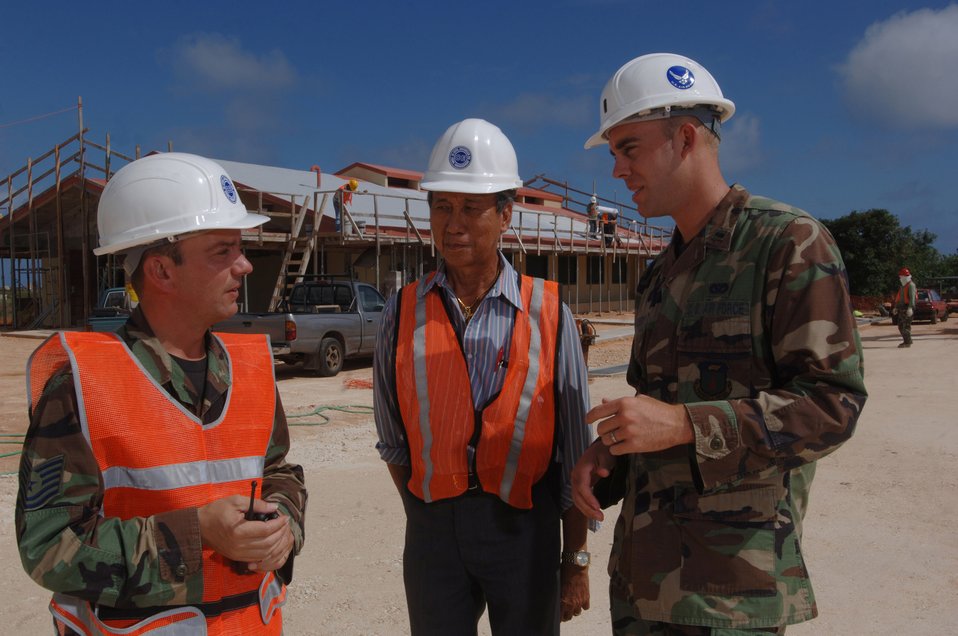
CE support

ANDERSEN AIR FORCE BASE, Guam (AFPN) -- (From left) Tech. Sgt. Chris Sorter, Sid Pilarca and 1st Lt. Charles Hansen inspect the progress of the construction of a military working dog facility here. The three are with the 36th Civil Engineer Squadron. They provide day-to-day mission support to military and civilian personnel and 15 associate units here. They also maintain expeditionary capability for Air Force missions deploying to, originating from and transiting through the base.